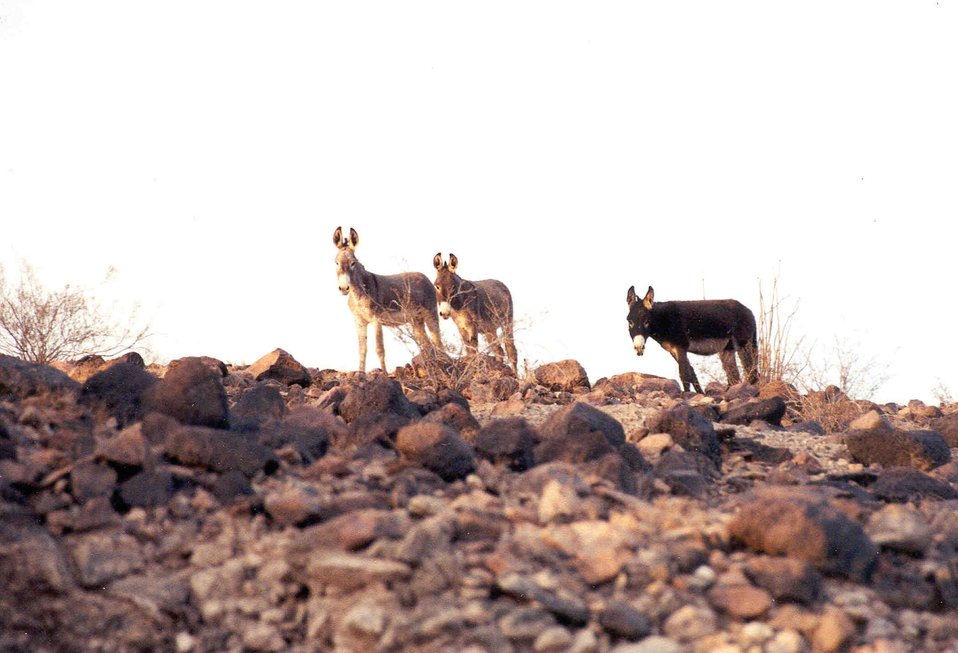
Three wild burros watching us watch them!